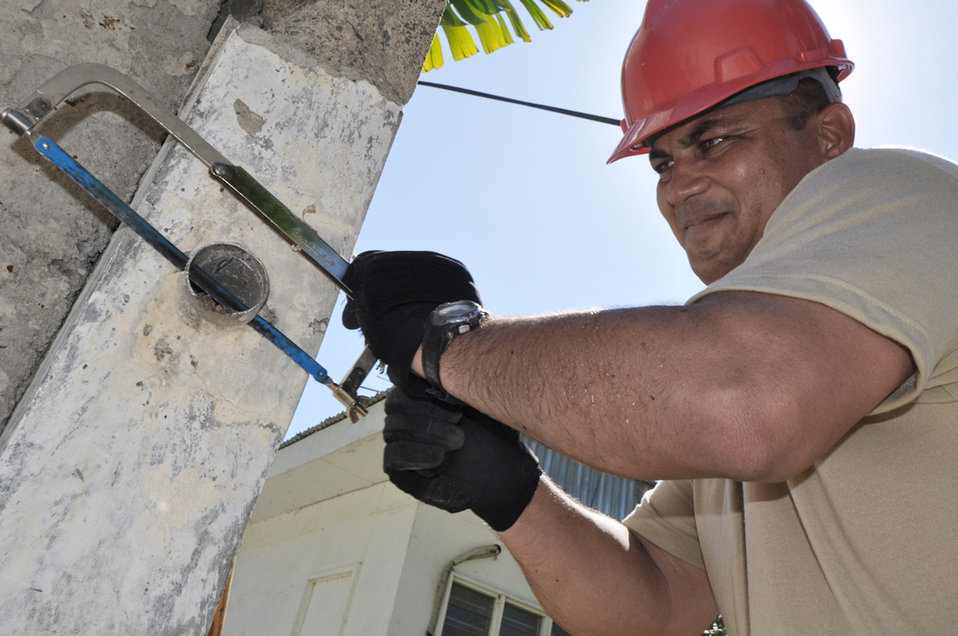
Guam Guard members leave mark in Dili

Senior Airman Joseph Sannicolas uses a pipe-cutter to remove an old pipe system outside the national hospital July 16 in Dili, Timor Leste. Airman Sannicolas is a heavy equipment and airfields operator with the Guam Air National Guard's 254th RED HORSE Squadron at Andersen Air Force Base, Guam. The squadron was in Timor Leste as part of Pacific Angel 2009, a Pacific Air Forces humanitarian assistance operation.